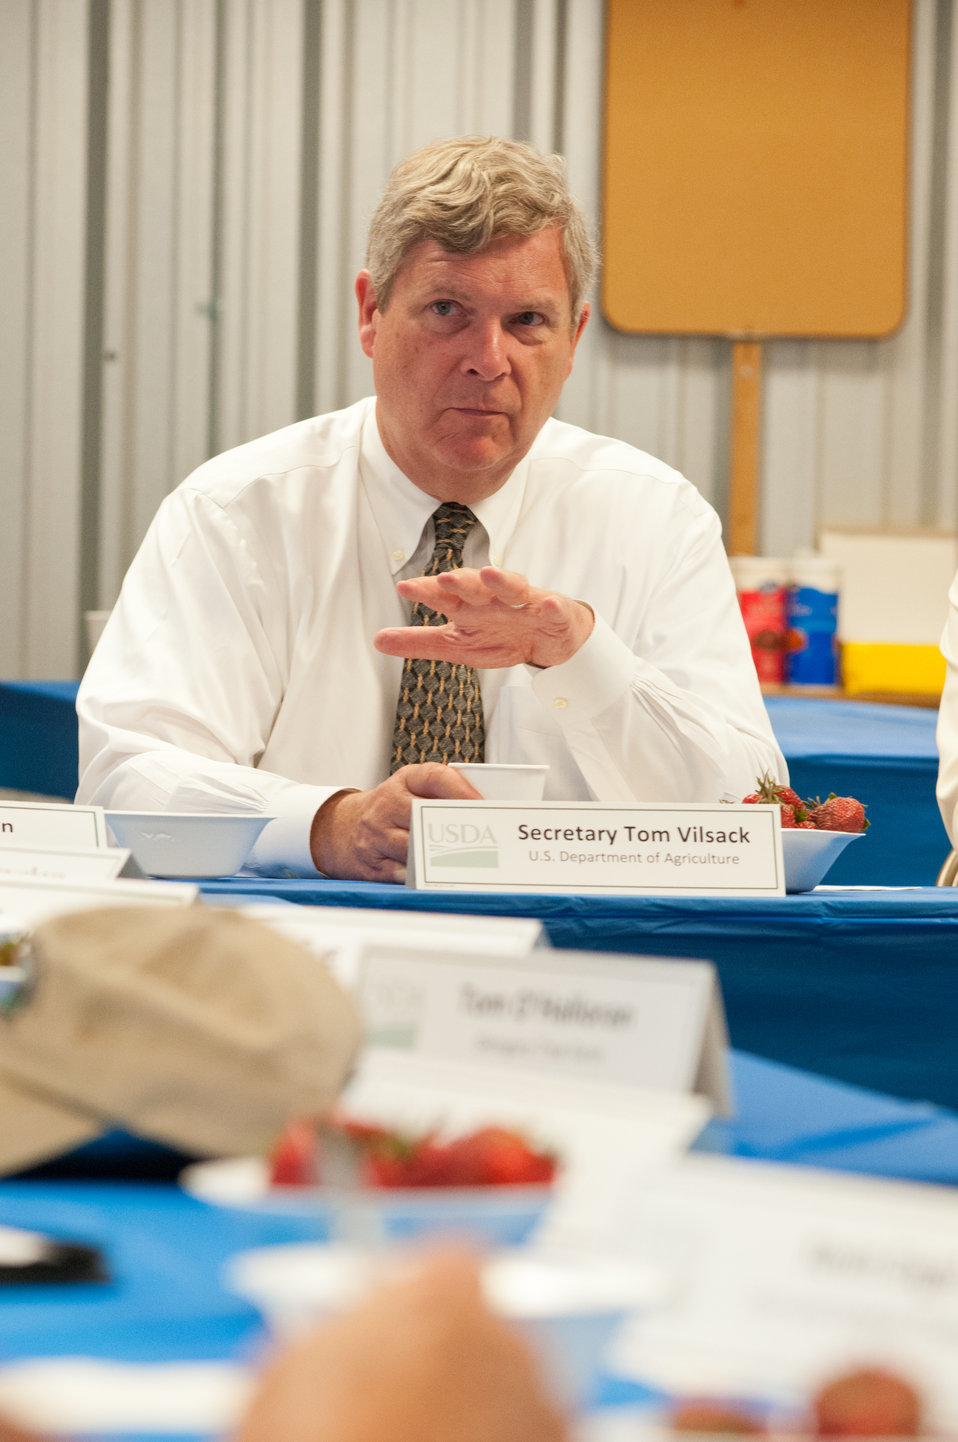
Agriculture Secretary Tom Vilsack held a round table discussion with local producers to listen to the producers concerns and answer their questions at Blue Ridge Produce in Elkwood, VA on Thursday, May 30, 2013. Blue Ridge Produce is a local food hub aggregating Virginia-grown fruits and vegetables for sale to wholesale customers in the Capitol region and strives to build a value-based relationship with Virginia growers of all sizes by handling the marketing and logistics to get their produce from farm to customer.